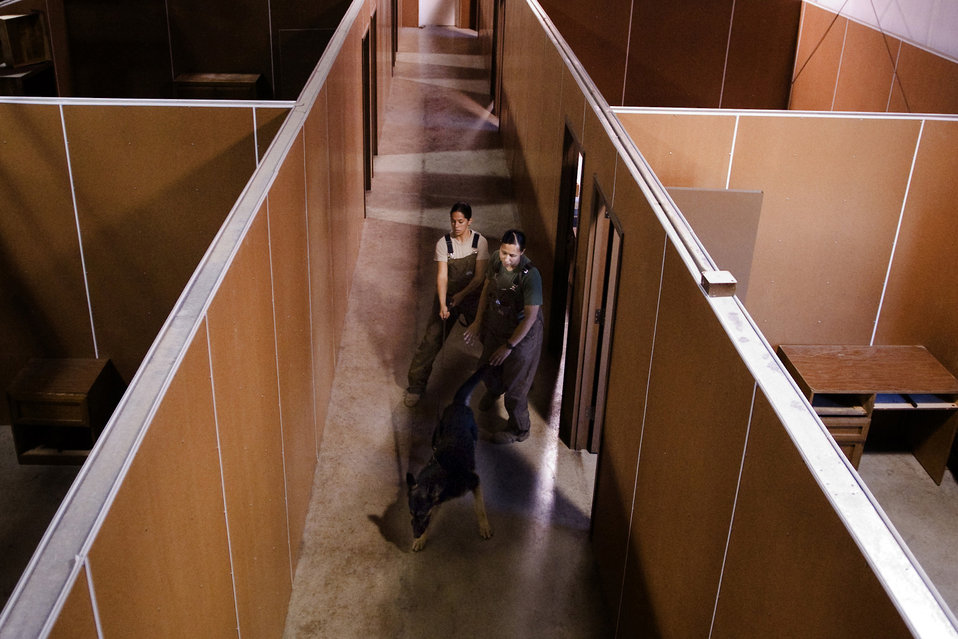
Training for military working dogs

Soldier and Marine dog handlers run a military working dog through a maze of simulated training scenarios on Lackland Air Force Base, Texas. Military working dogs are enrolled in a 60- to 90-day training program where they are taught to detect explosives and drugs. They are also taught deterrence training and how to protect their handler.